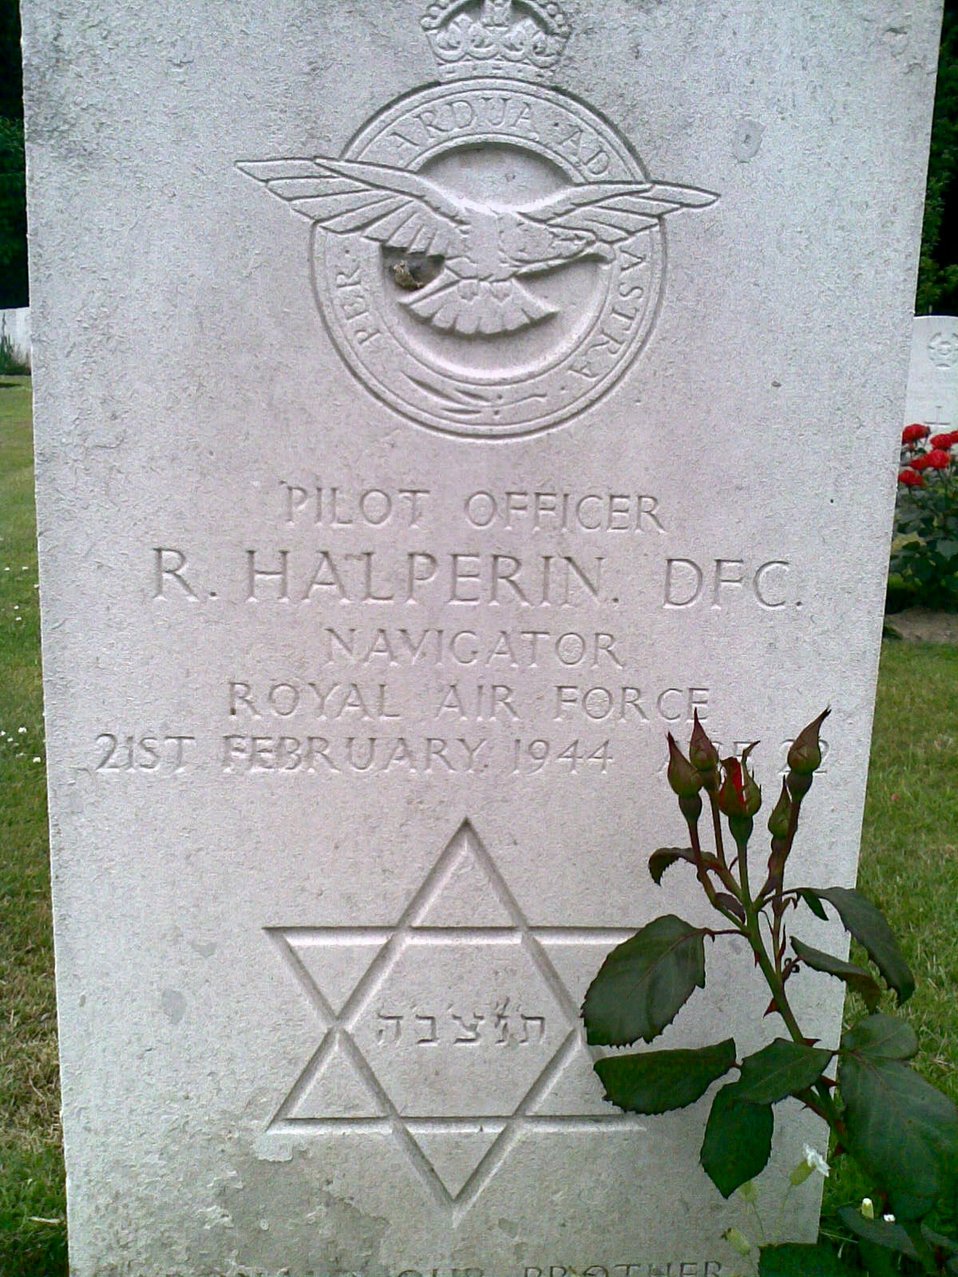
Deutsch: Rheinberg War Cemetery - Grabstein eines Soldaten jüdischen Glaubens